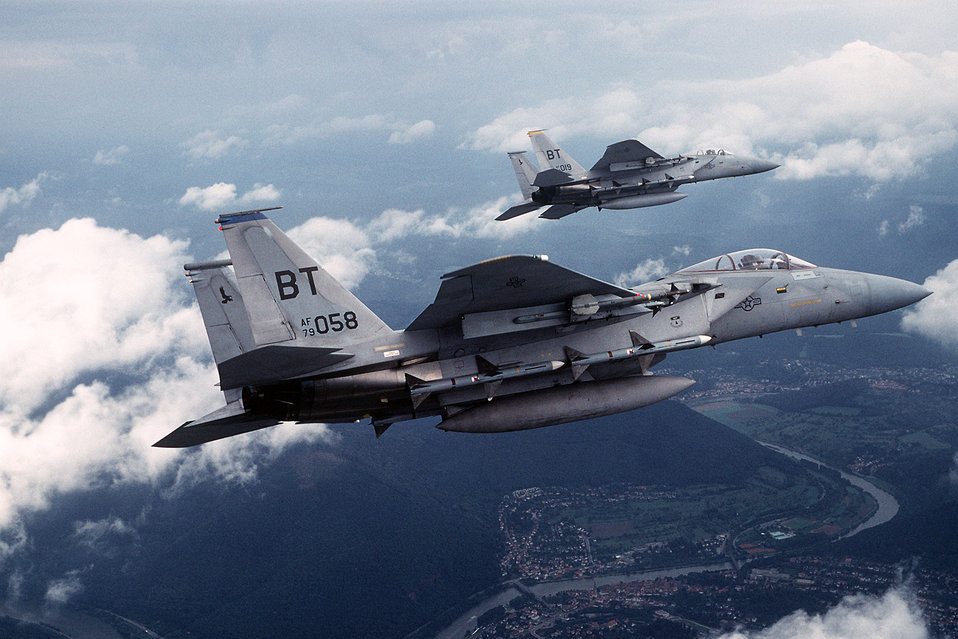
F-15C Eagle

1990's -- F-15C Eagle aircraft armed with AIM-7 Sparrow and AIM-9 Sidewinder missiles deploy to Saudi Arabia during Operation Desert Shield. The aircraft are assigned to the 36th Tactical Fighter Wing.